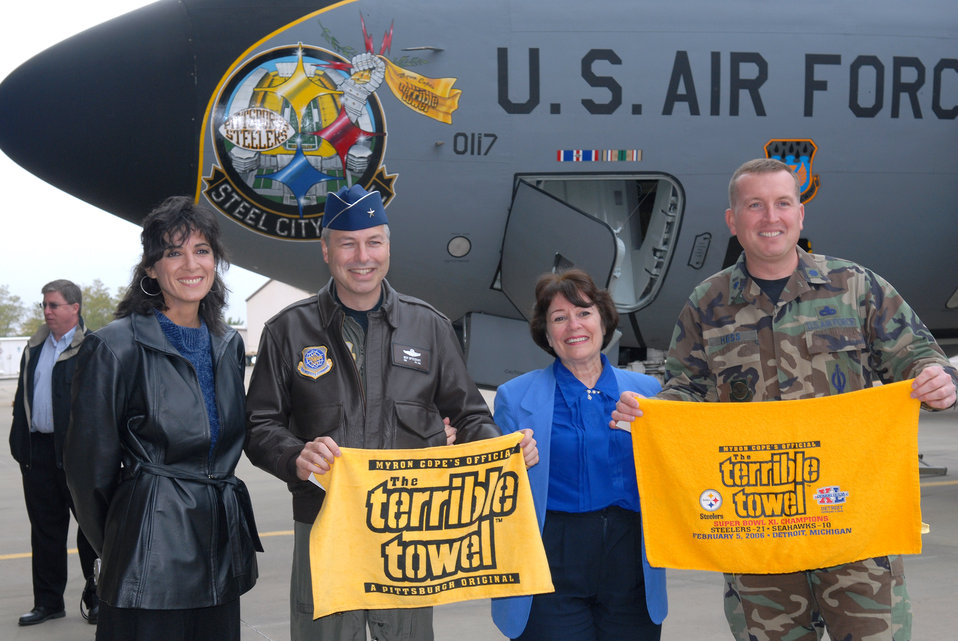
Air Guard unit shows off its 'Steel City Pride'

Artist Donna Pitaro joins Brig. Gen. Roy Uptegraff, attorney Ruth Zittrain and Lt. Col. Tom Hess Oct. 18 along with the Airmen of the Pennsylvania Air National Guard's 171st Air Refueling Wing in celebrating the unveiling of the new